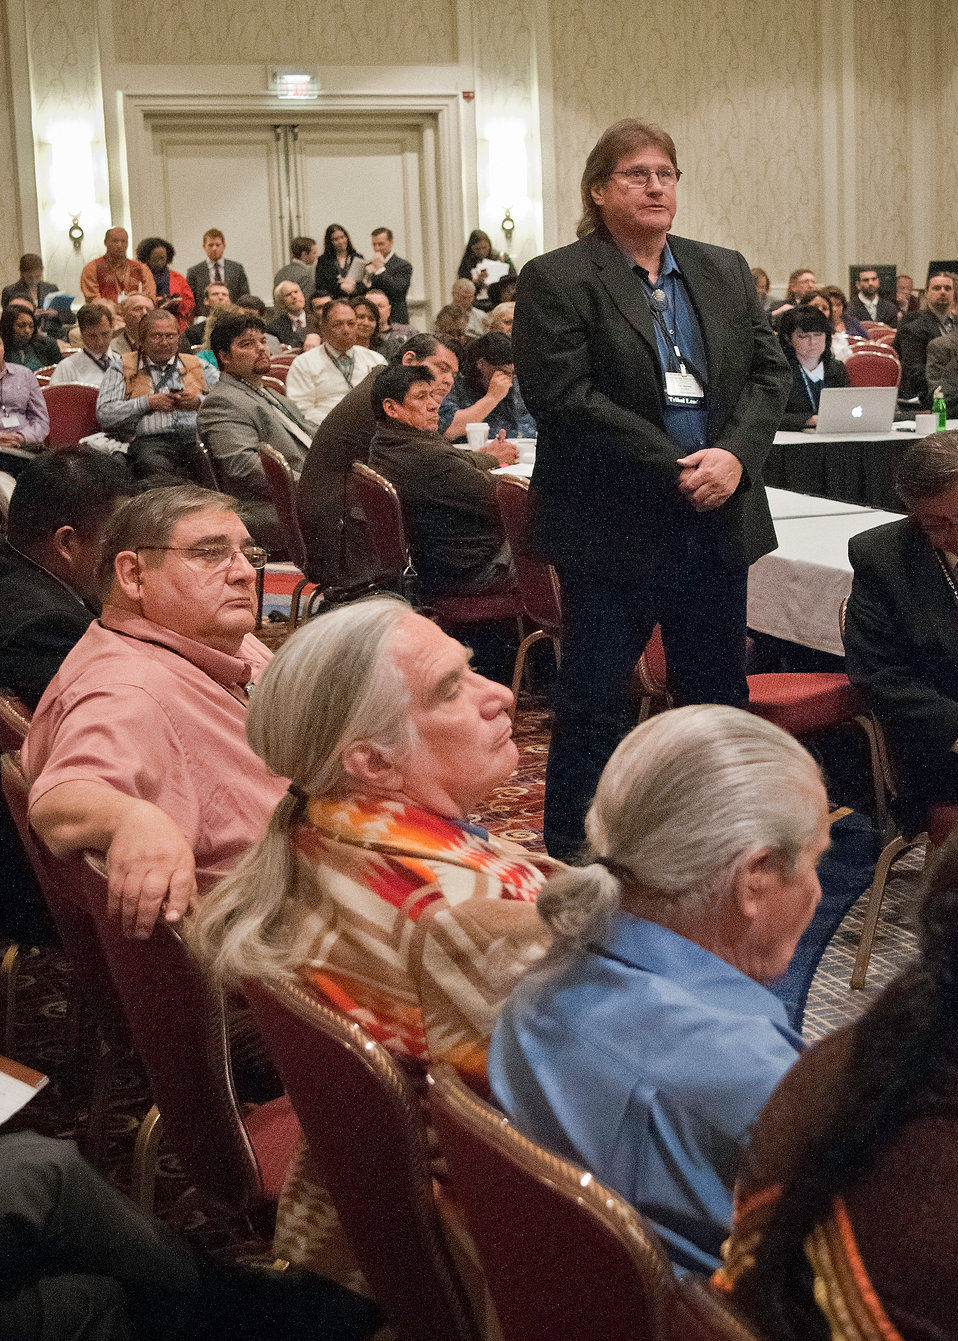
Native Wind, Energy Independence, Intertribal Coup, Council on Utility Policy from Ft. Pierre, SD, Pat Spears had the opportunity to ask Agriculture Secretary Tom Vilsack a question during the United States Department of Energy (DOE) Tribal Summit with American Indian and Alaska Native Leaders in Washington, DC, on Wednesday, May 4, 2011. Secretary Vilsack discussed alternative energy, economic development and conservation programs available through the Department of Agriculture.